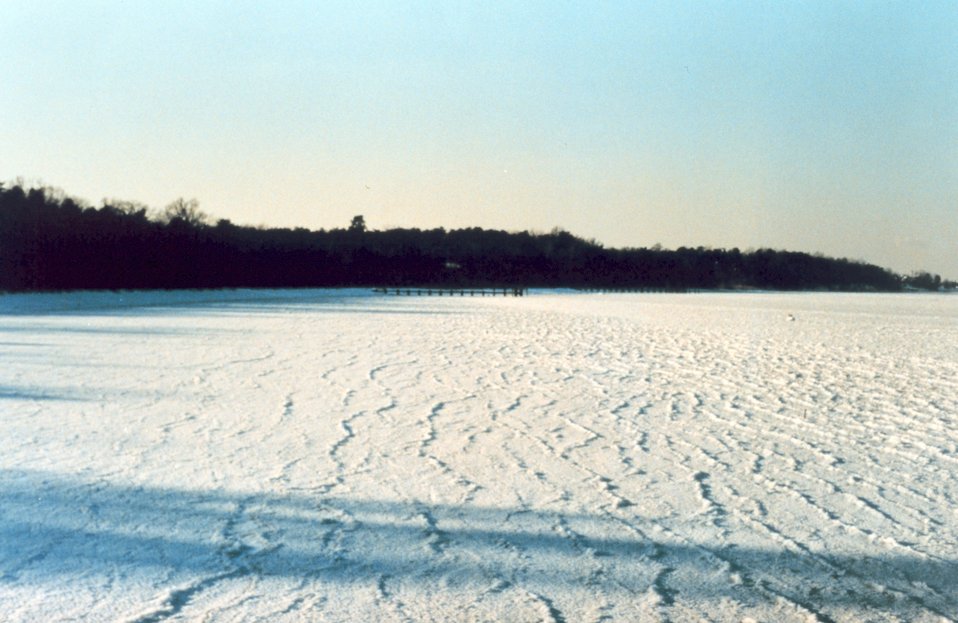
Iced over Patuxent River -looking upriver